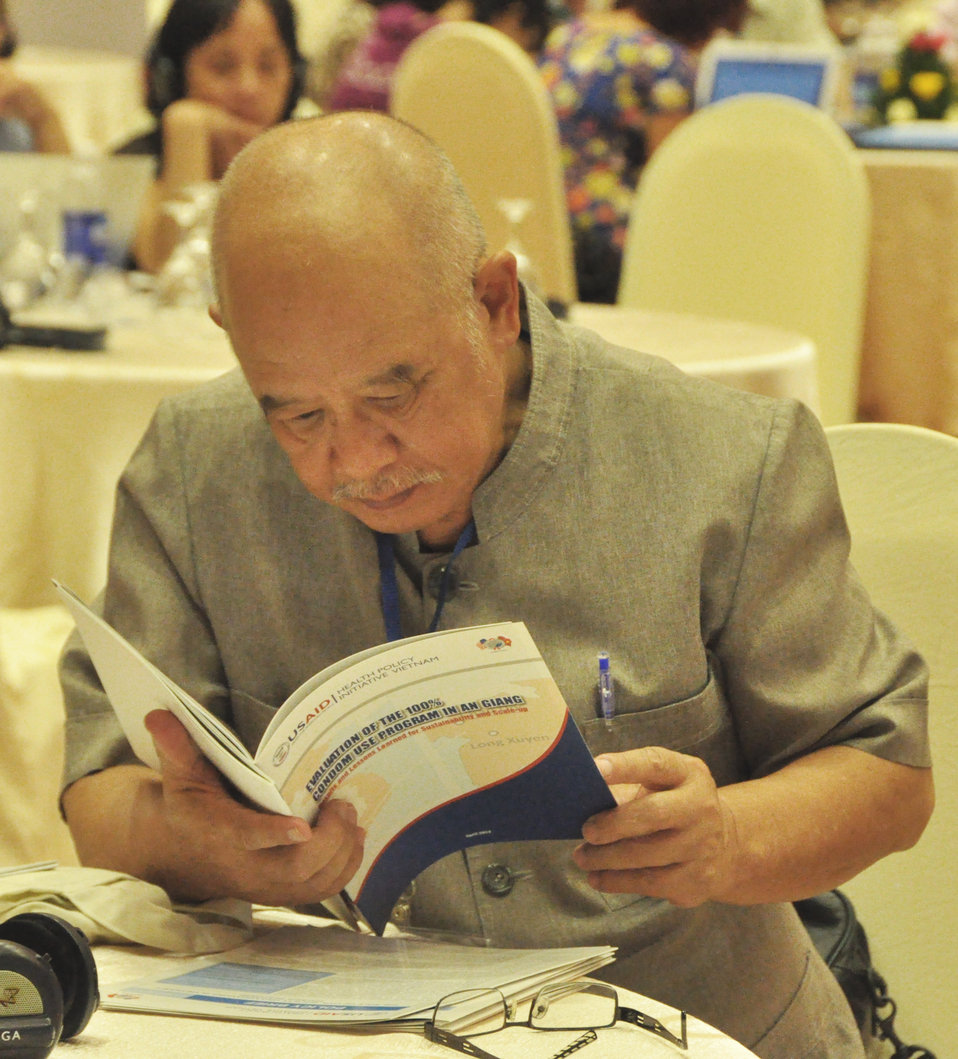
USAID Health Policy Initiative End of Project Workshop

Hanoi, August 14, 2013.